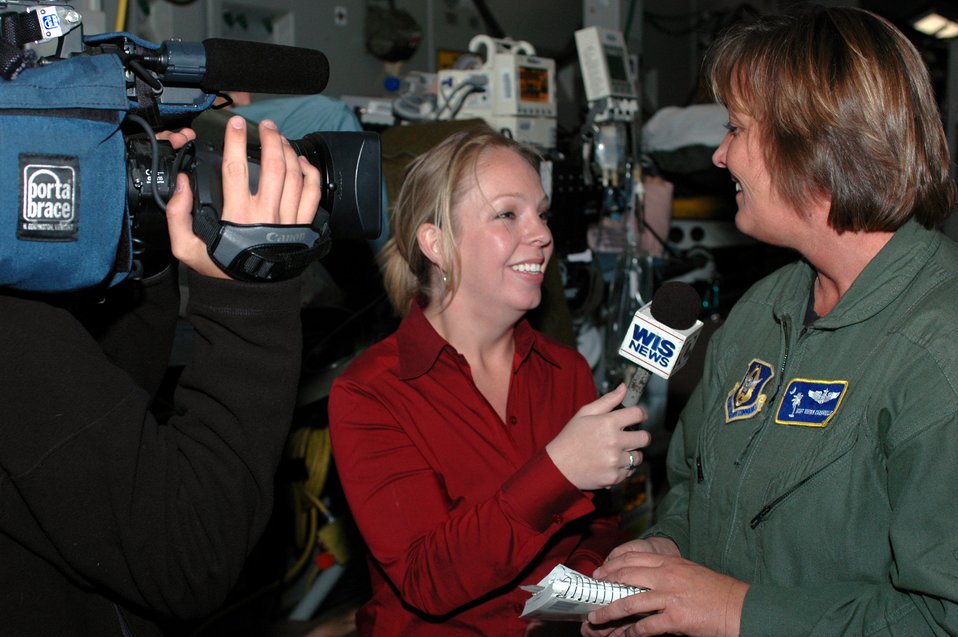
Mother and daughter's worlds collide at 30,000 feet

Stefanie Caraviello (left), the senior producer for WIS-TV in Columbia, S.C., interviews her mother, Master Sgt. Vivian Caraviello, a reservist with the 315th Aeromedical Evacuation Squadron at Charleston Air Force Base, S.C. Both Caraviellos were on a recent aeromedical evacuation mission; the mother caring for patients and the daughter telling the story.